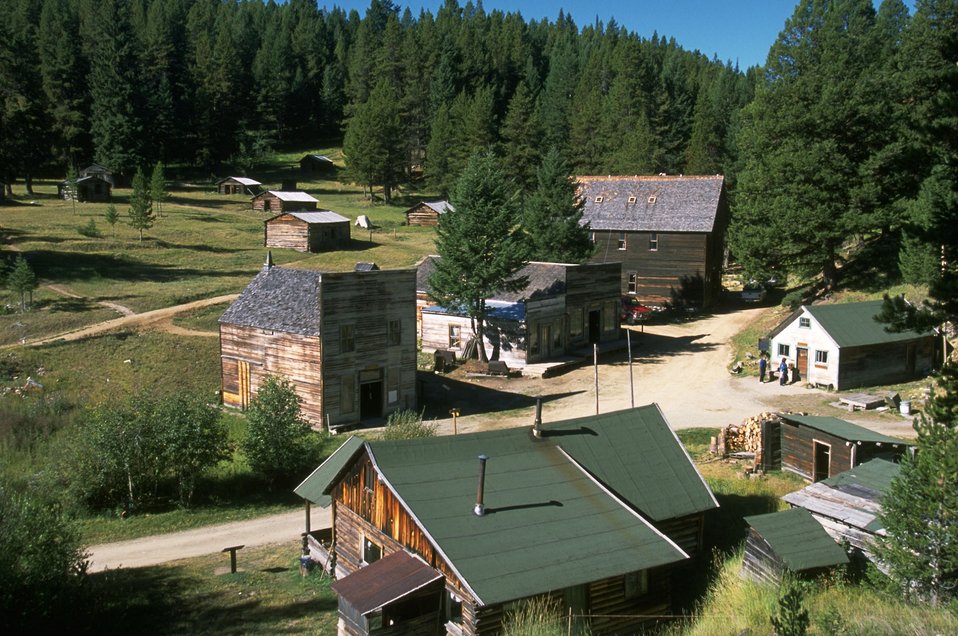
Garnet Ghost Town from overlook